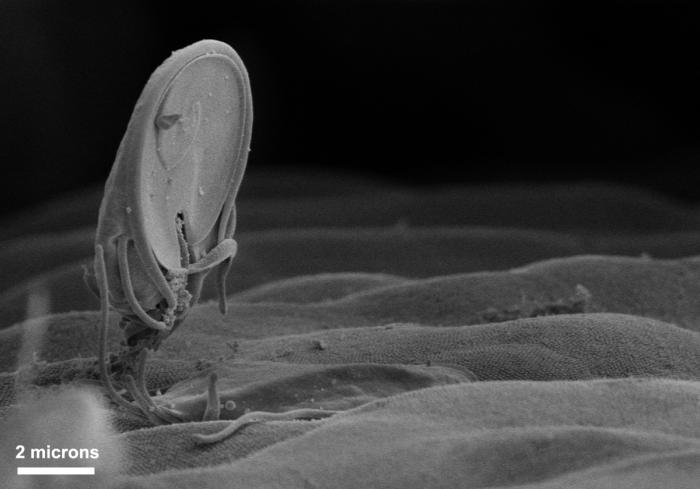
This scanning electron micrograph (SEM) depicted a Giardia sp. intestinal protozoan situated in an upright position on the mucosal surface of the intestine. The ventral adhesive disk, which facilitates adherence to the intestinal surface, can be seen on the underside of the organism.